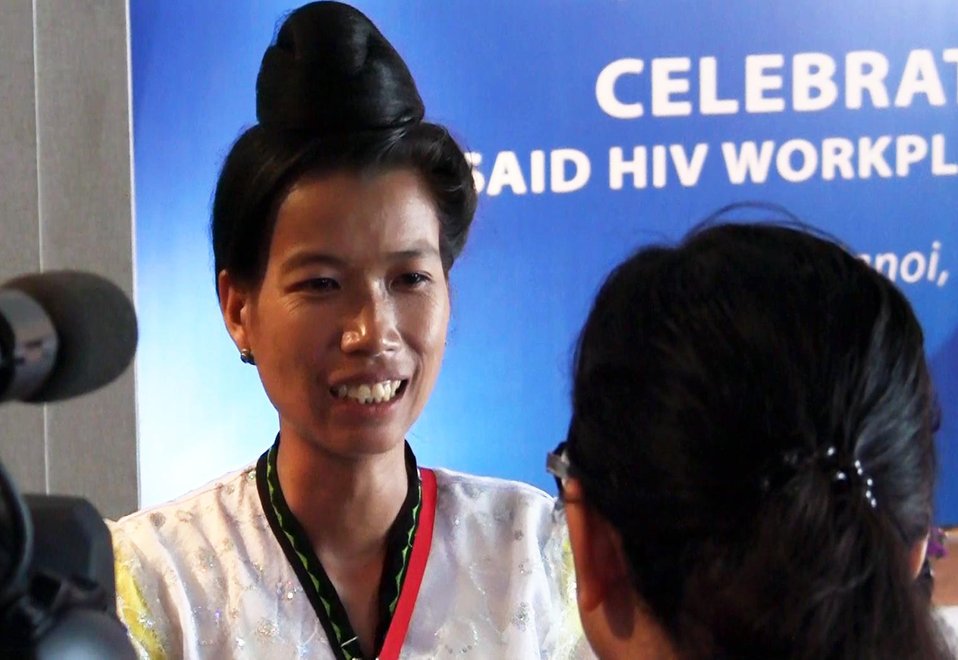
A USAID Microfinance Beneficiary Tells Her Story at a Workshop in Hanoi

Hanoi, June 20, 2013